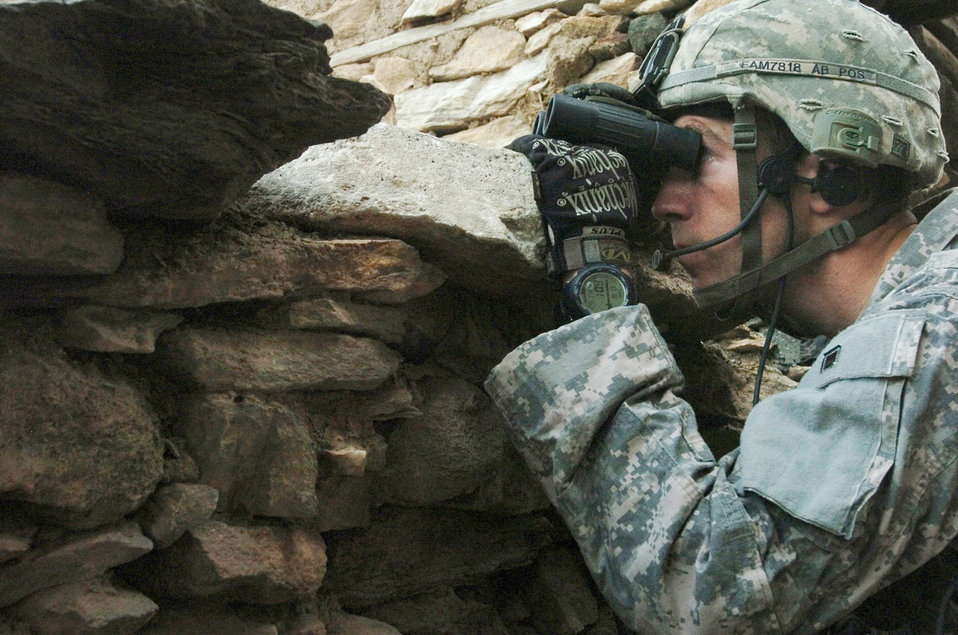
Gunfight and Airstrike in Korengal Valley

Tech. Sgt. Joel McPherson, a joint terminal attack controller, scans the Korengal Valley's steep hills Aug. 13 for insurgents in Afghanistan's Kunar Province. Moments later, Sergeant McPherson and fellow members of Company B, 2nd Battalion, 12th Infantry Regiment, 4th Brigade Combat Team, 4th Infantry Division, were attacked. The 20-minute gun battle ended when 500 pound bombs, dropped by Air Force F-15E Strike Eagles, destroyed insurgent positions in the surrounding hills. No civilians were injured. International Security Assistance Force troops across Afghanistan have increased operations in recent months, in order to ensure safety and security during Afghanistan's second national election, scheduled for the end of August.